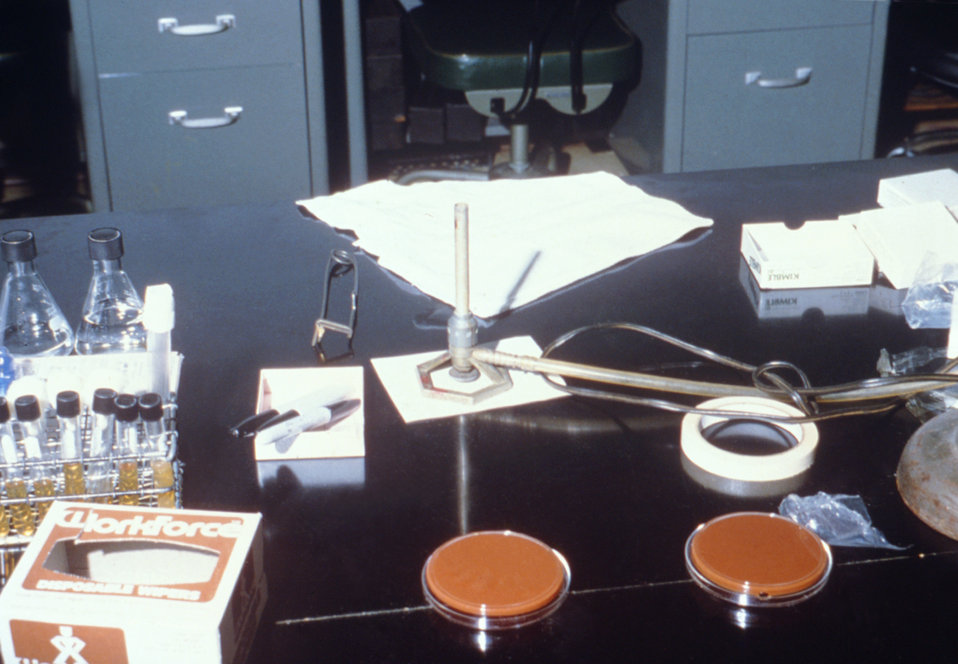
This photograph, taken during a 1980 NIOSH laboratory safety study shows a Bunsen burner (cntr), among other lab equipment.